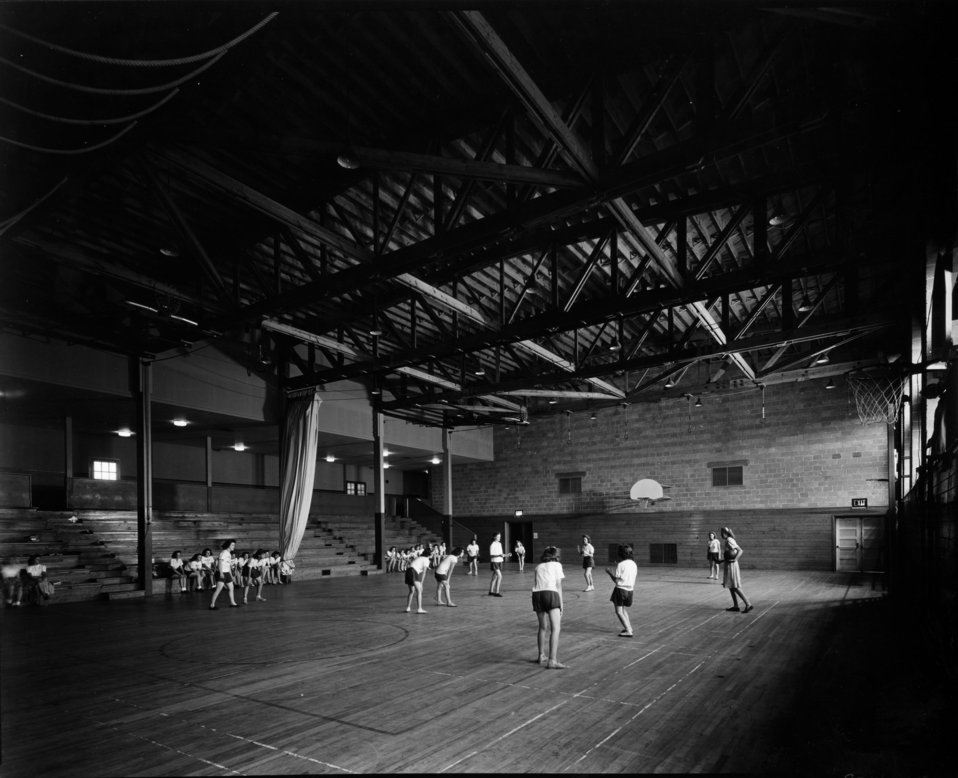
Schools at Oak Ridge